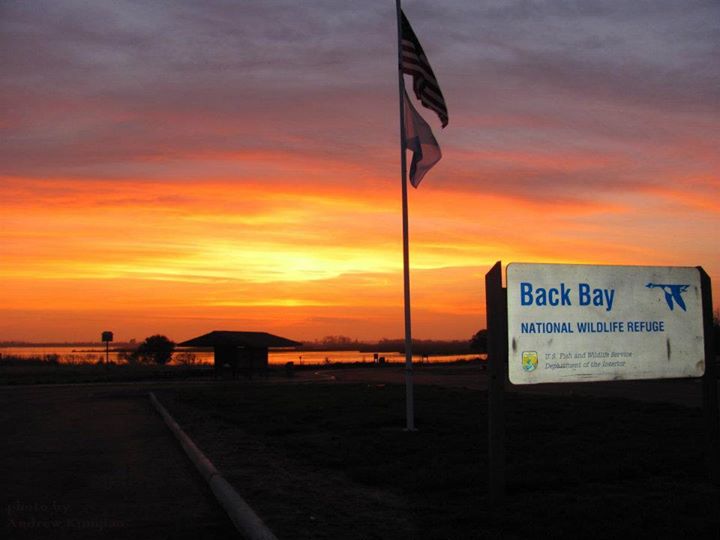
Photo of the Week - Back Bay National Wildlife Refuge (VA)

Photo of the Week - 2/3/14

Sunset over the bay at Back Bay National Wildlife Refuge in Virginia Beach, VA.